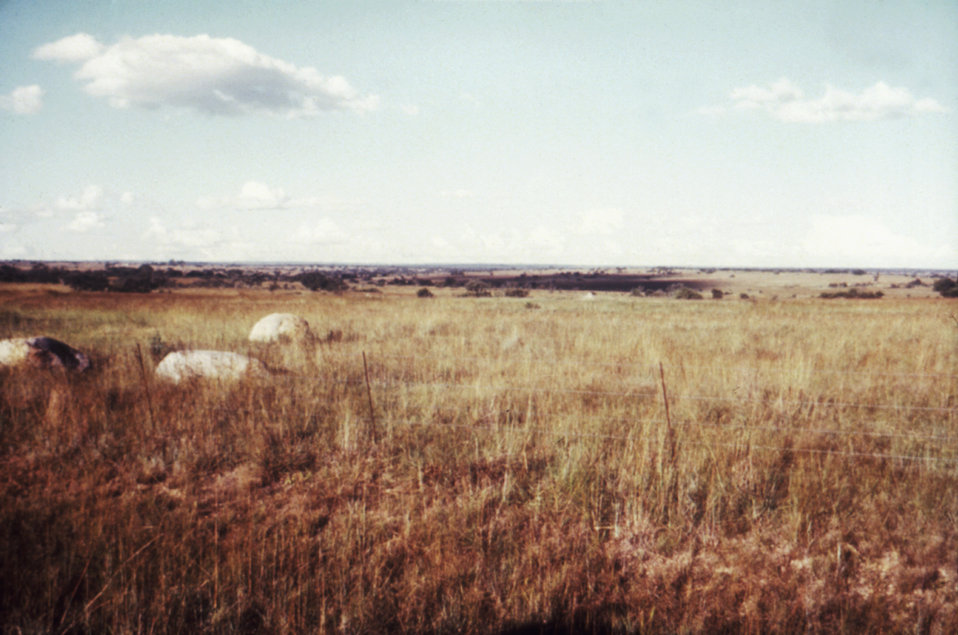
This 1975 image was taken during a Marburg virus investigation in Salisbury, Rhodesia, known as Harare, Zimbabwe after 1980.